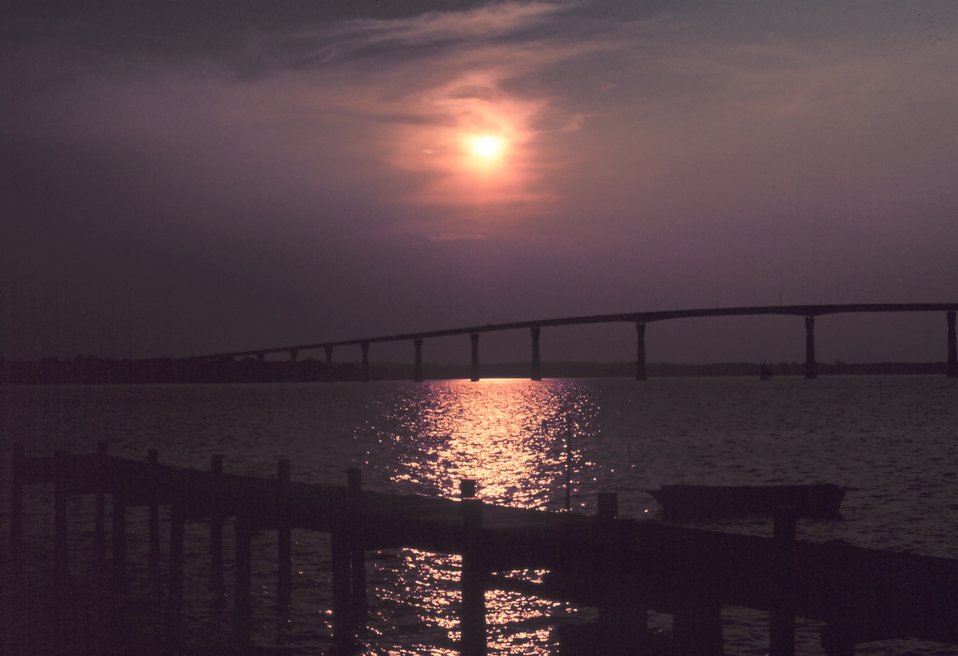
Sunset over the Thomas Johnson Bridge joining Calvert and St. Mary's Counties Maryland.